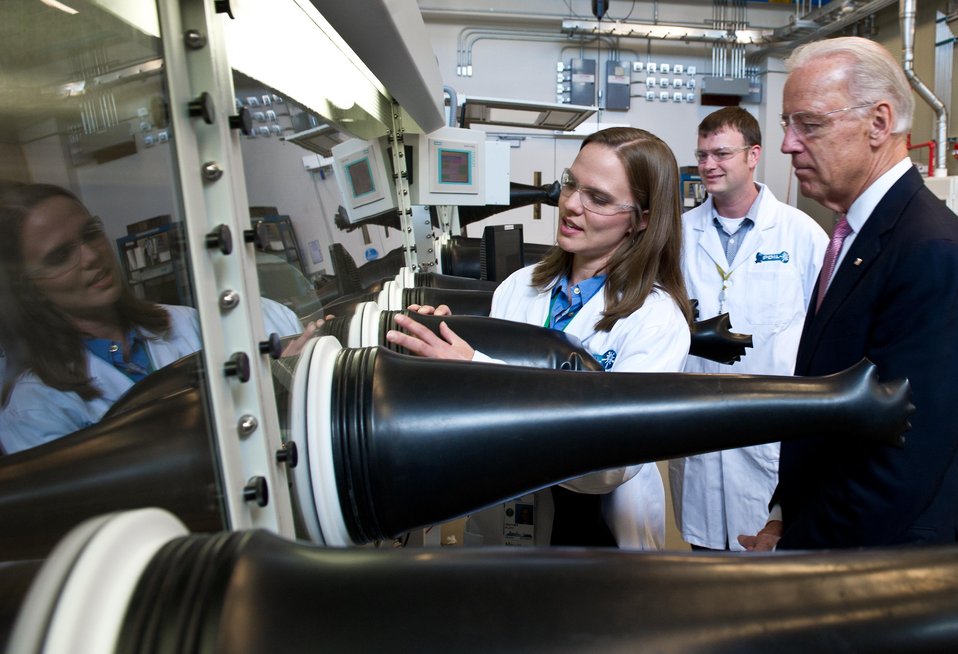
VICE PRESIDENT JOE BIDEN TAKES TOUR OF THE PROCESS DEVELOPMENT AND INTEGRATION LABORATORY AT NATIONAL RENEWABLE ENERGY LABORATORY ON MAY 20,2011.